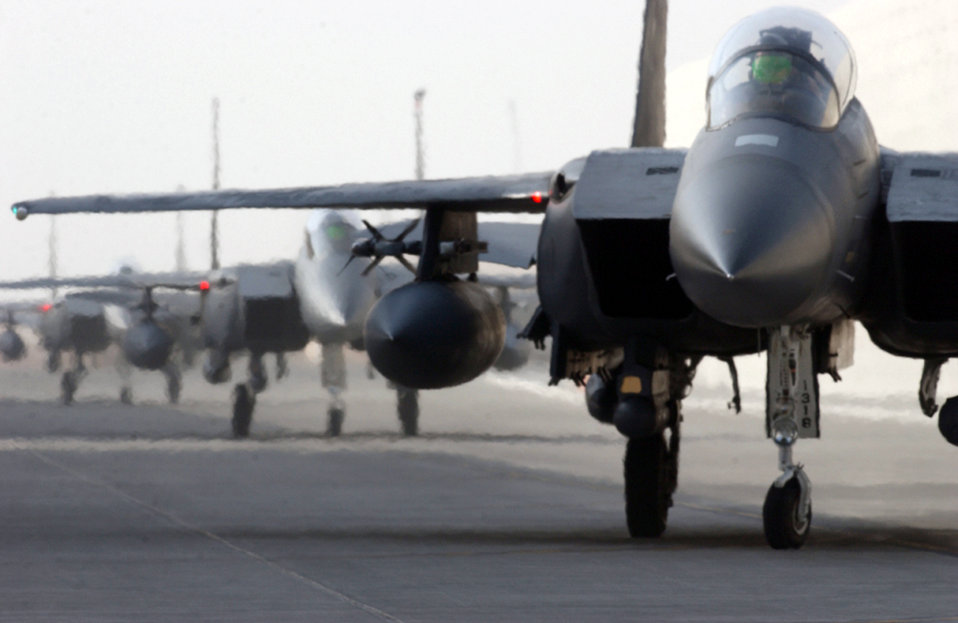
Strike Eagle aerie

OPERATION IRAQI FREEDOM -- F-15E Strike Eagles from the 494th Fighter Squadron at Royal Air Force Lakenheath, England, arrive at a forward-deployed location in Southwest Asia.